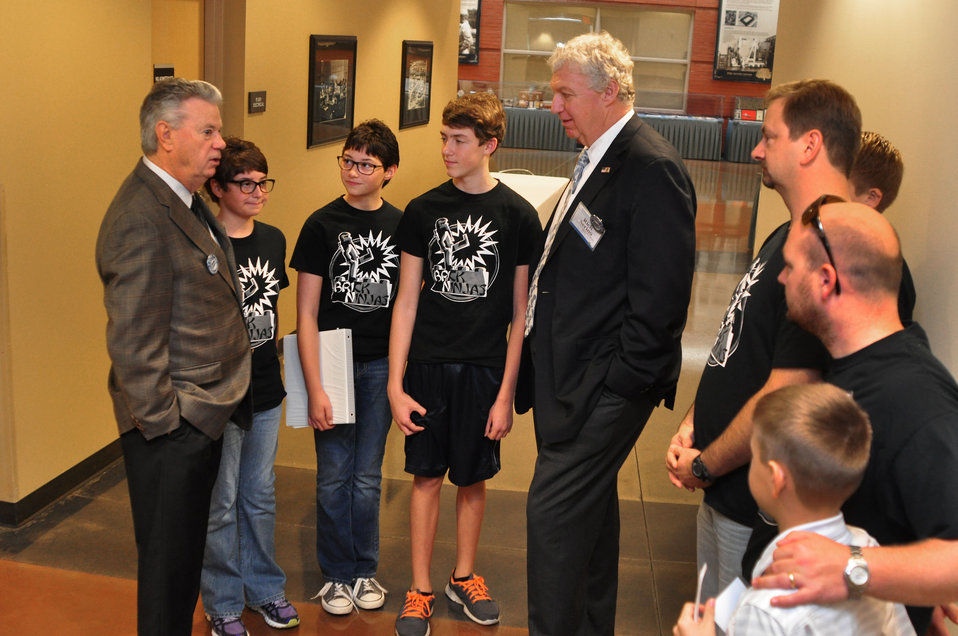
Major General(RET) James Bassham, Dir. TEMA and Richard Serino Deputy Administrator, FEMA Visits with Lego Champs Brick Ninjas in Oak Ridge 2013

13-116-341DOE photo Lynn Freeny 9-26-2013 Oak Ridge Tennessee